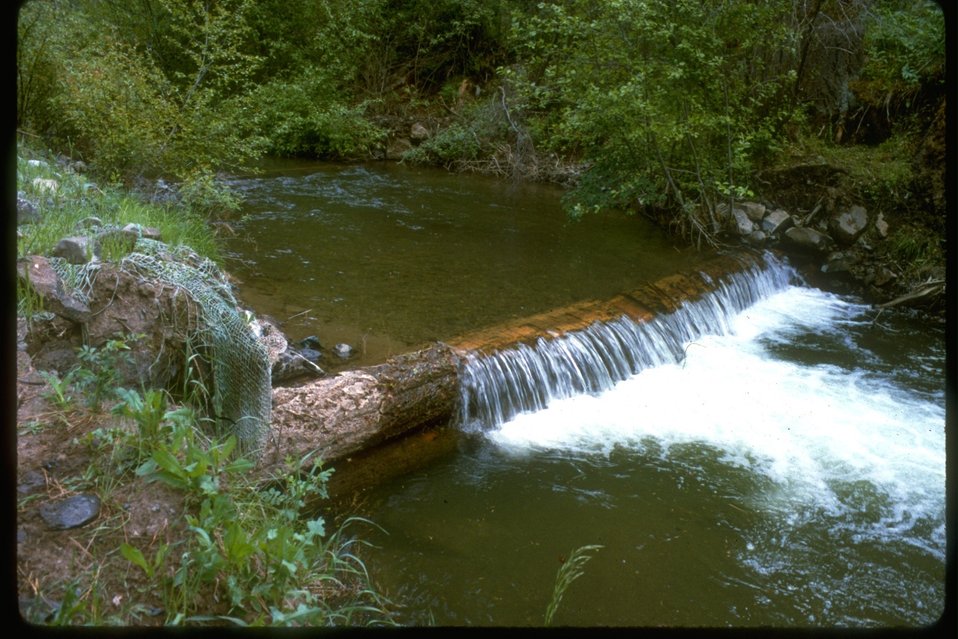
Instream structure (weir) in a small stream in northeastern Oregon.